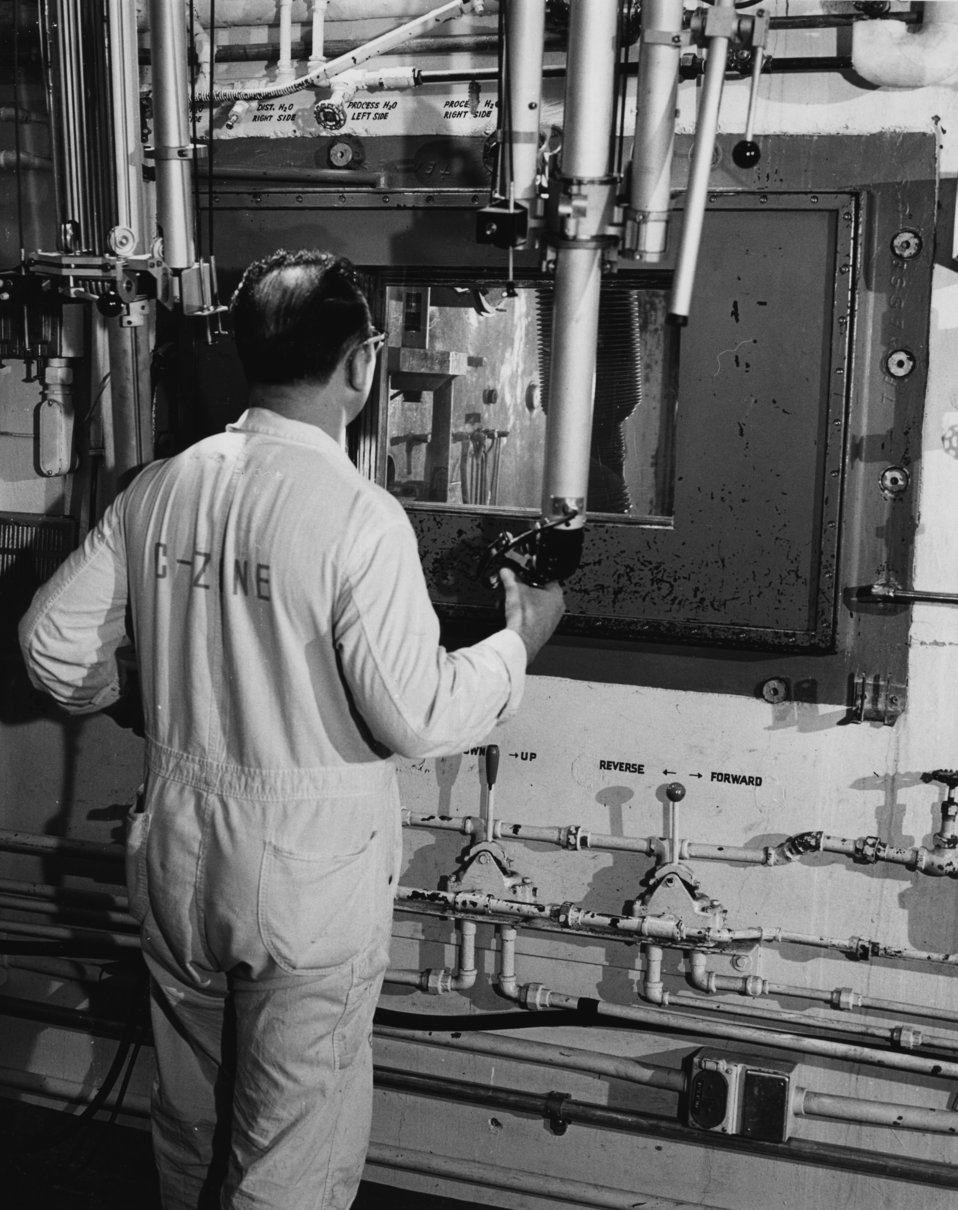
Operator Using Mechanical Arms at Hot Cells ORNL

67-085-11 DOE photo Frank Hoffman 3-1967 Oak Ridge Tennessee